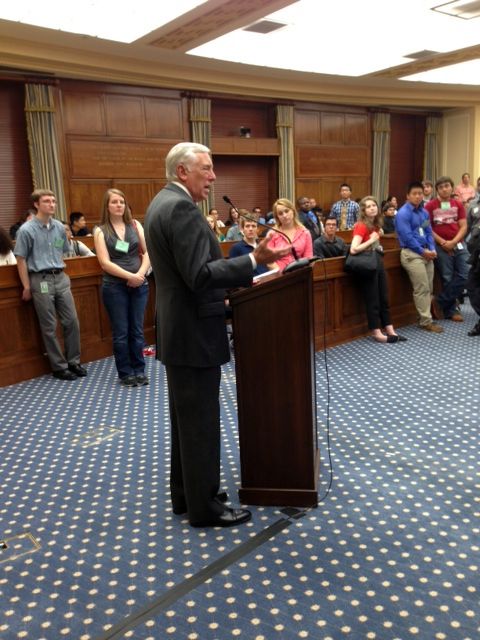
House Democratic Whip Steny Hoyer MD-5, (center) speaks to students participating in NIST's Summer Undergraduate Research Fellowship (SURF) program in the House Science, Space, and Technology Committee hearing room. The event afforded an opportunity for Members of Congress to meet students from their district who are in the program. Over 130 students and teachers attended the event as did 21 Members of Congress or their representatives.